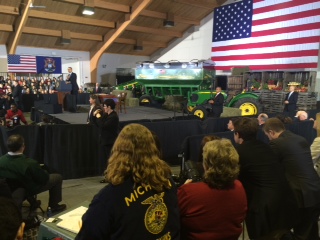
Michigan FFA members listen to President Barack Obama speak on the importance of the Agricultural Act of 2014 to America’s economy at Michigan State University in East Lansing, MI on Friday, February 7, 2014. The President spoke about the progress over the last five years and how this bill will build on that progress.